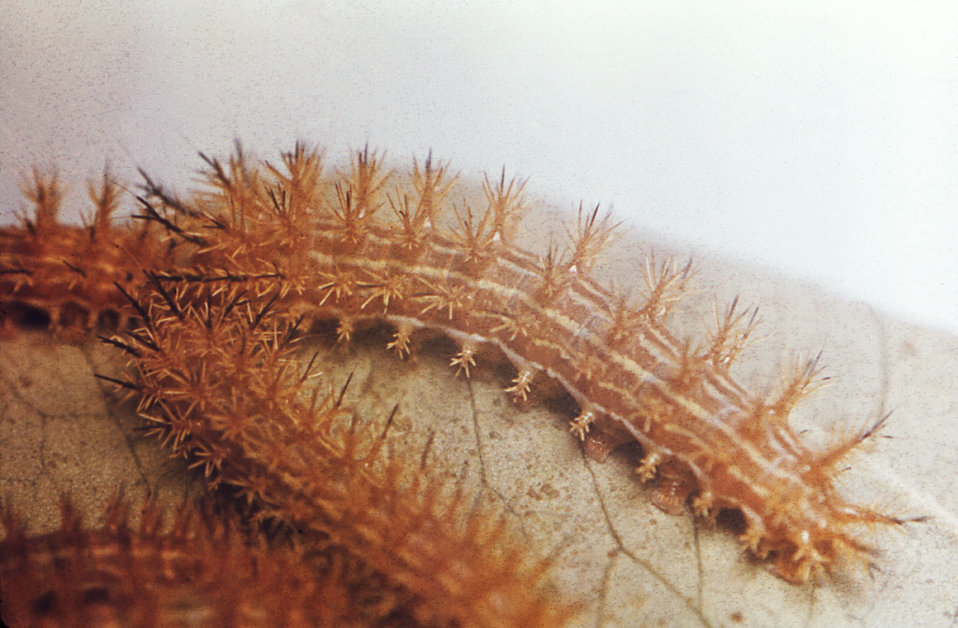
This photograph depicts a number of Io Moth, Automeris io, larvae.